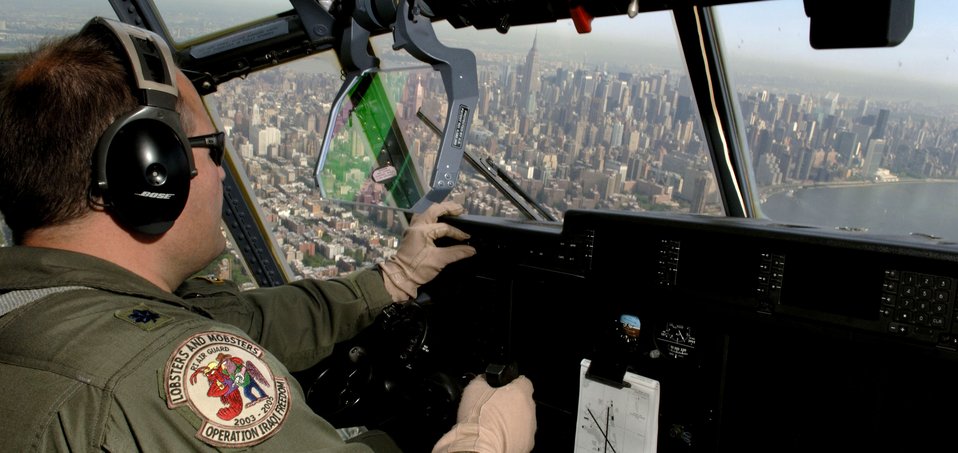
Heritage Flight over New York

Lt. Col. Todd Oliver scans the New York City skyline during a media flight over the famous city on Thursday, May 25, 2006. Colonel Oliver was piloting a C-130 Hercules, the support aircraft for